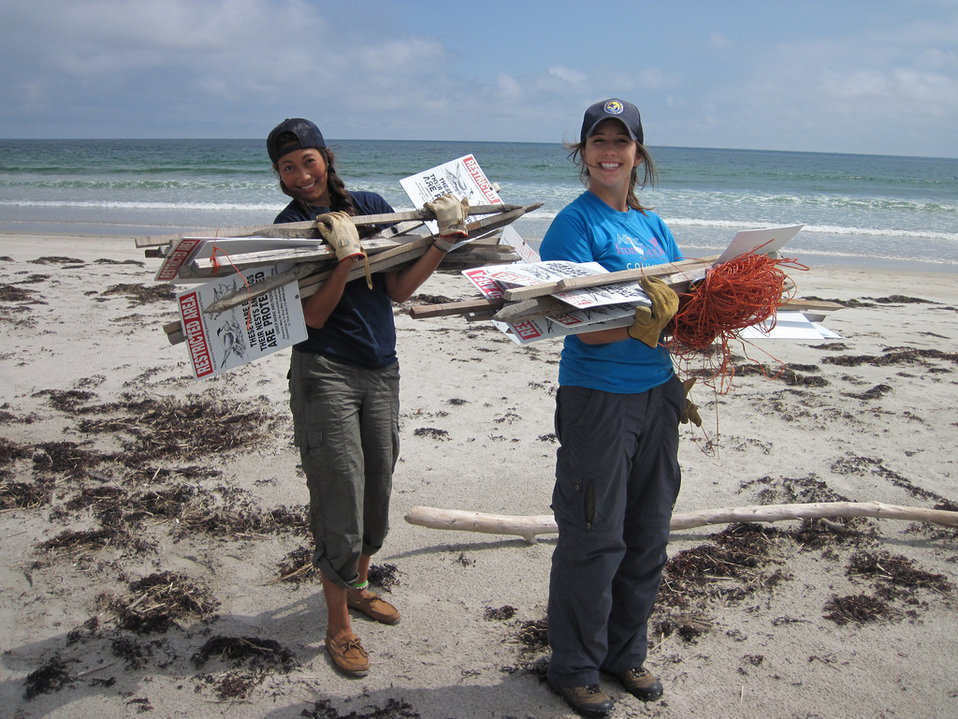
Protecting piping plover

U.S. Fish and Wildlife Service